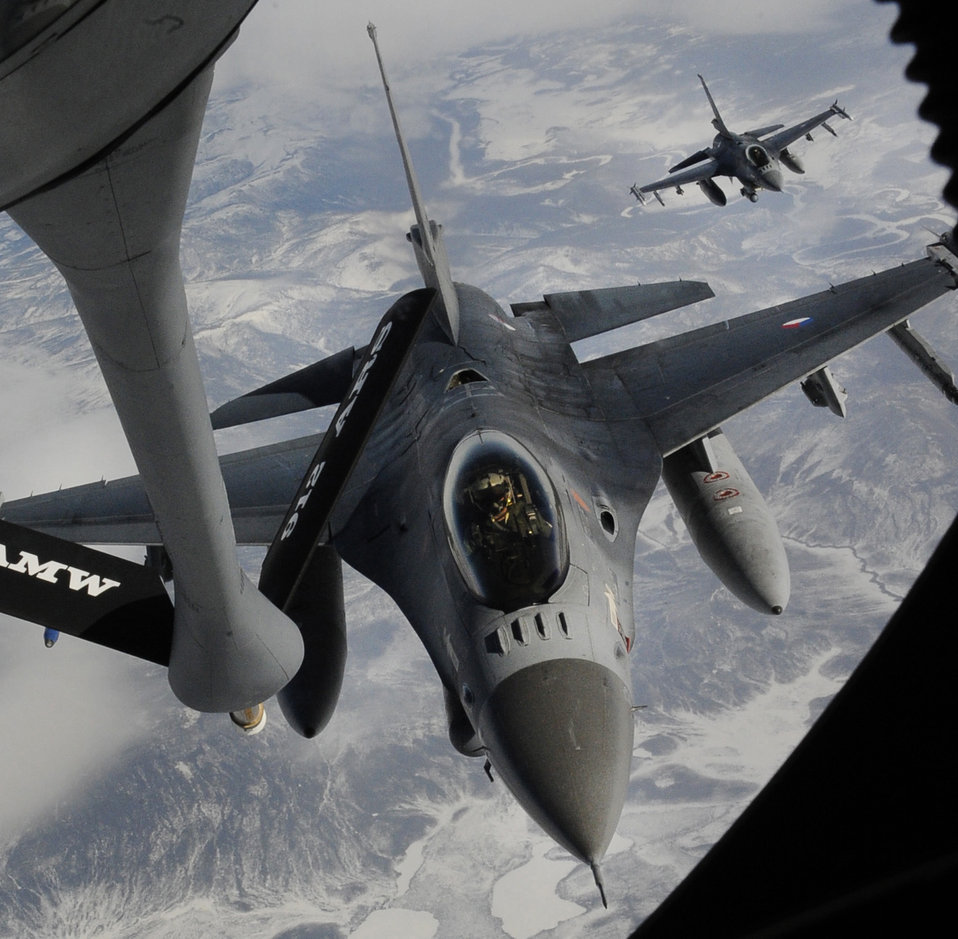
Pulling up to the pump

An F-16 approaches a KC-135 Stratotanker for refueling April 26, 2011, above Eielson Air Force Base, Alaska, during RED FLAG-Alaska.